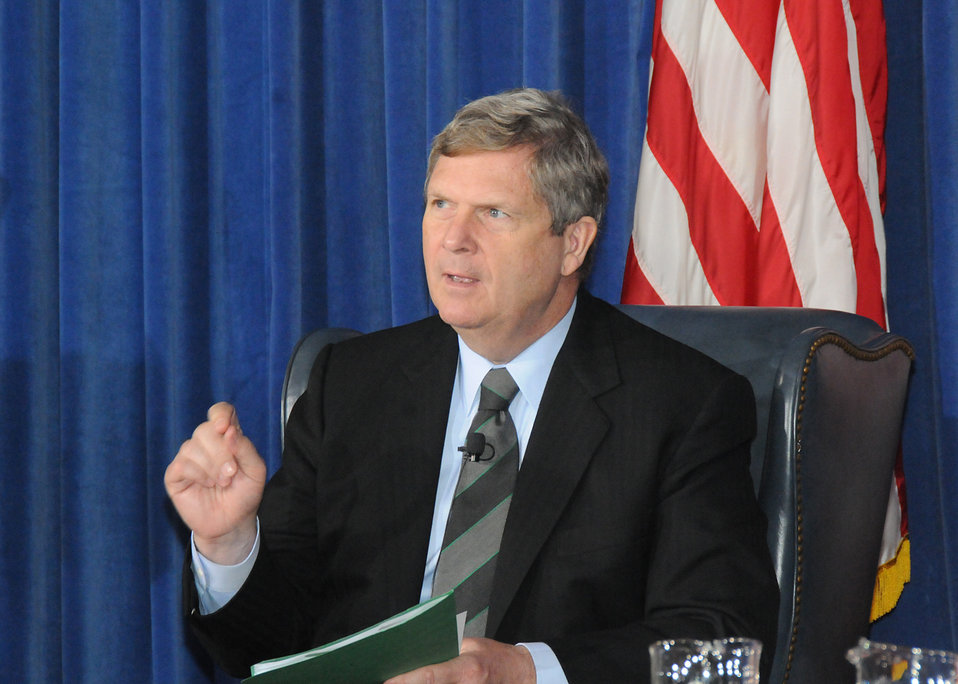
Agriculture Secretary Tom Vilsack hosts a panel discussion about “Conserving working lands for the benefit of all Americans” at the Department of Interior in Washington, D. C., on Friday, April. 16, 2010. USDA photo 10di1317-115